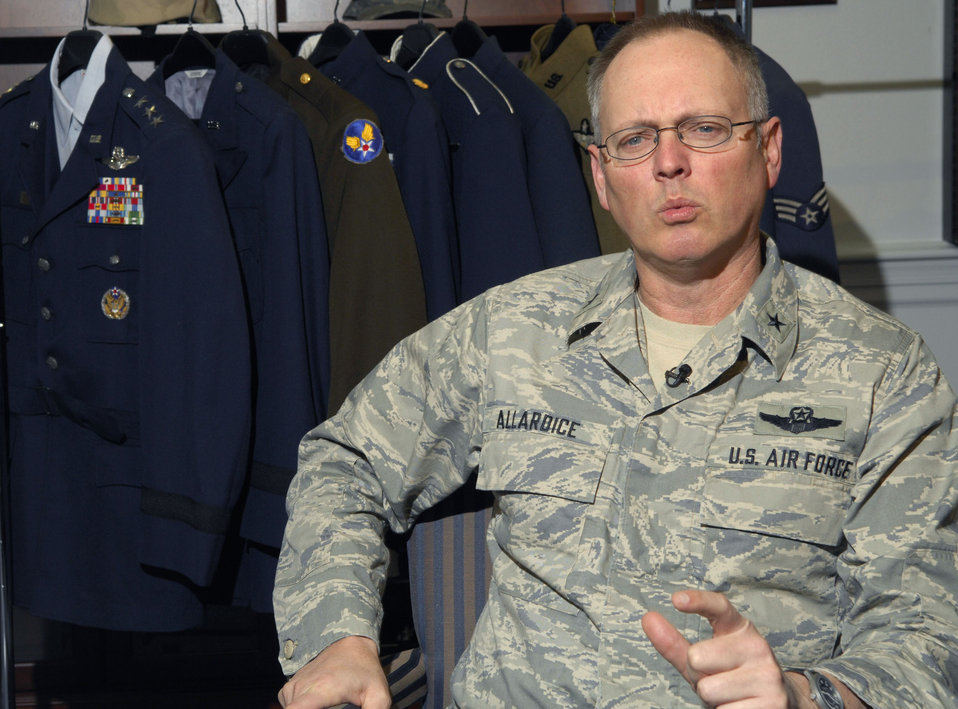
Air Force official discusses uniform updates

Brig. Gen. Robert R. Allardice talks about the new service coat and Airman Battle Uniform uniform during an interview Feb. 26. The new ABUs will start being distributed to Airmen participating in AEF 7 and 8 before the rest of the Air Force receives them.